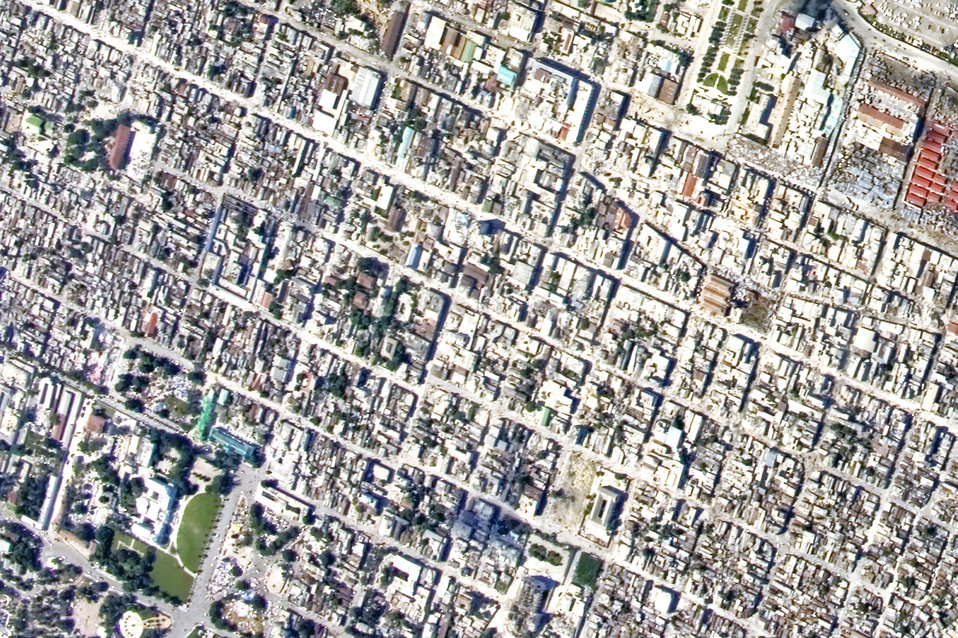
Haiti Observation

An aerial view of Port-au-Prince, Haiti with the damaged Presidential Palace in the bottom left hand corner from an OC-135B Open Skies observation aircraft Jan. 14, 2010. The OC-135B flew over Haiti for more than three hours taking panoramic photos to help coordinate U.S. military support for the Haiti relief effort.